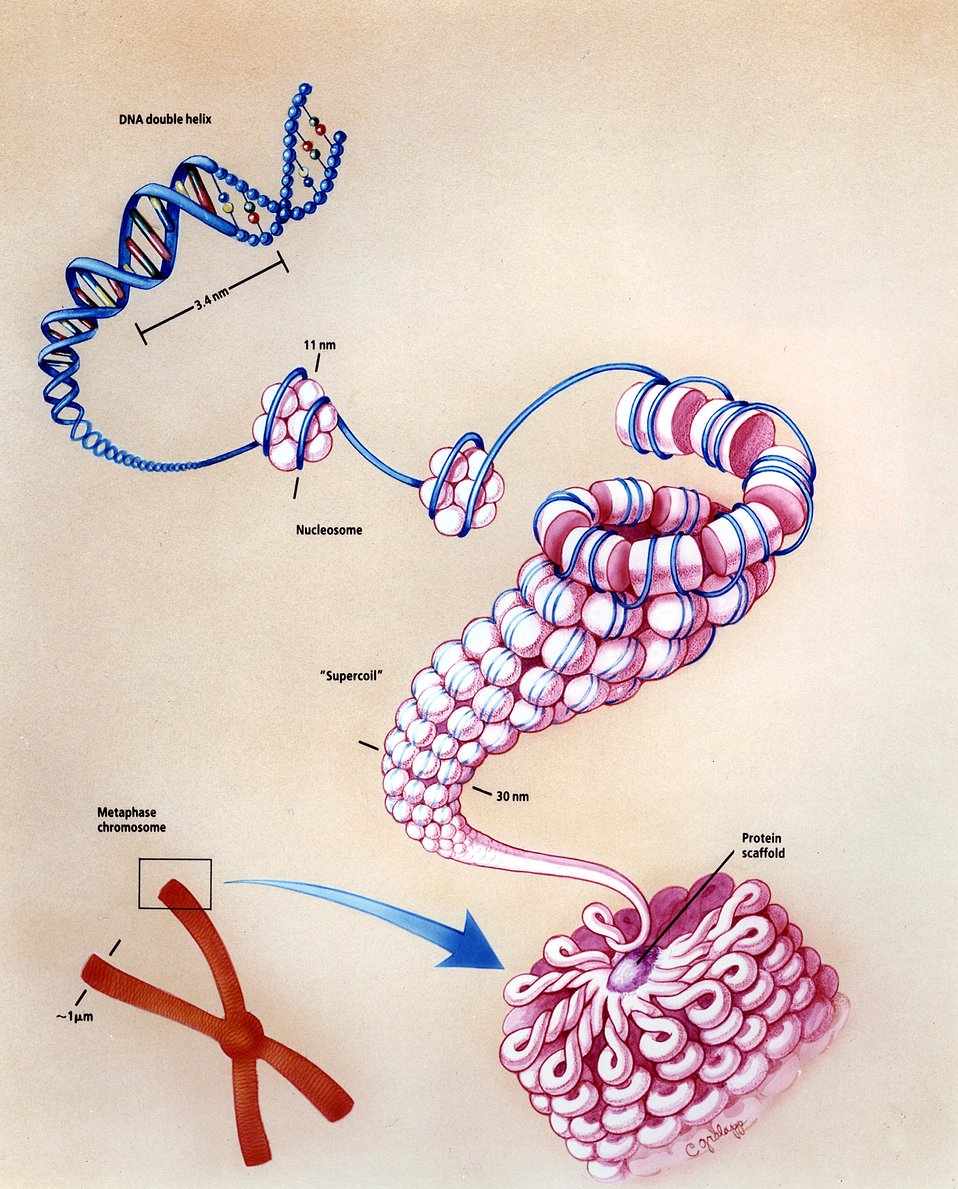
Layers of Complexity. The intervening levels of structural detail, between DNA's double helix and the chromosome.